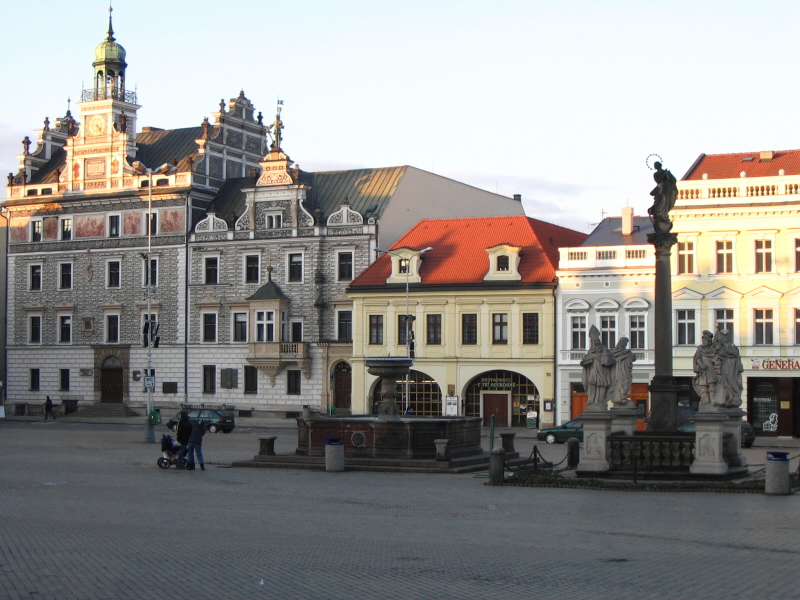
Čeština: V levé části fotografie se nachází novorenesanční radnice